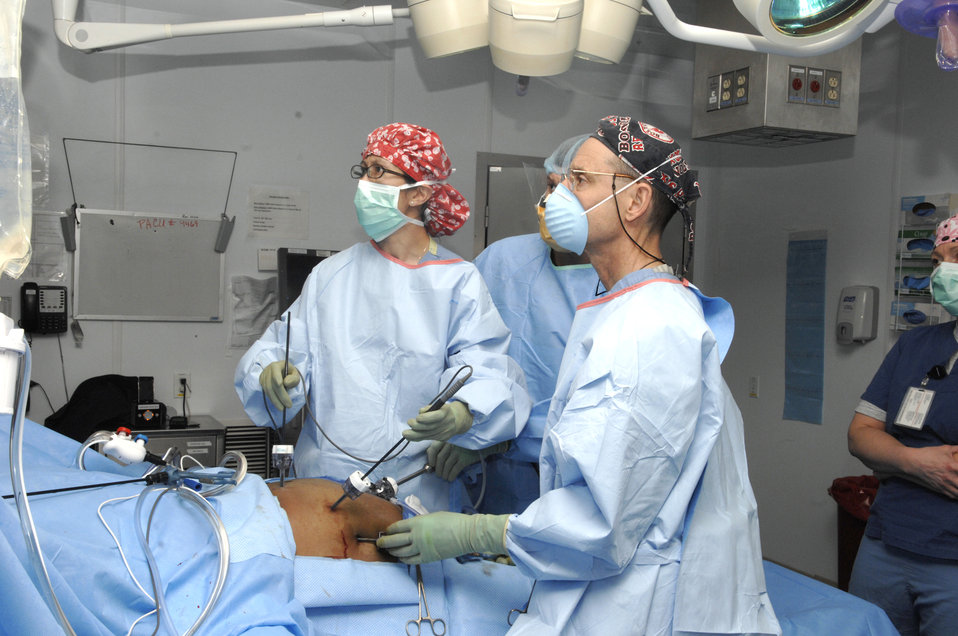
Operating room

Army Lt. Col. Rob Sheridan, Navy Lt. William Ward and Maj. Kullie Pichakron, all surgeons at Craig Joint Theater Hospital, perform a cholecystectomy on a patient March 17, 2011.